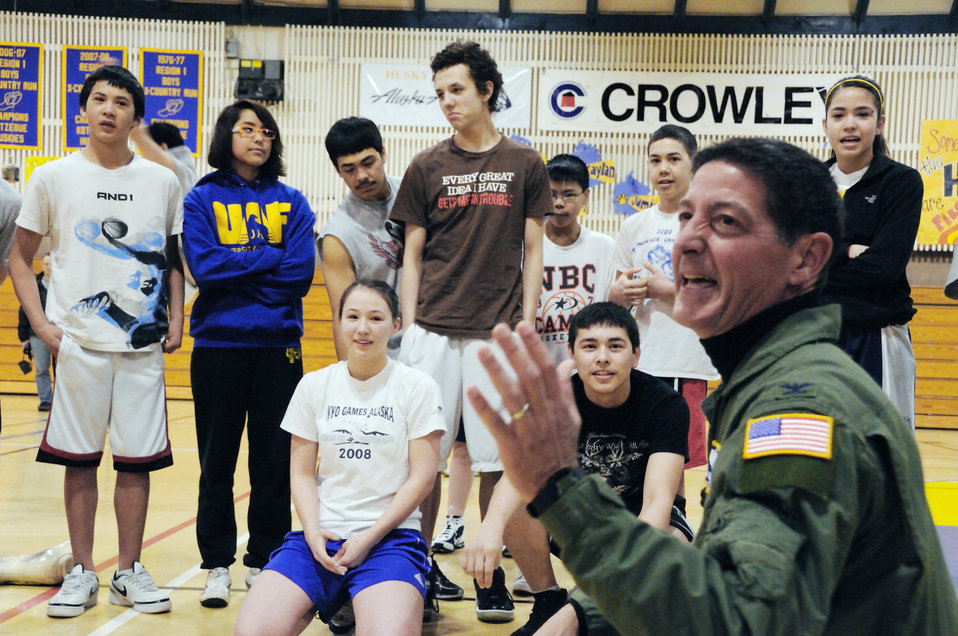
Air Force Reserve Command Surgeon General Col. Dominic DeFrancis laughs with students

Col. Dominic DeFrancis laughs with students from Kotzebue High School during his visit for Operation Arctic Care 2010 April 16 through 17 in Kotzebue, Alaska. Colonel DeFrancis is the Air Force Reserve Command Surgeon General.